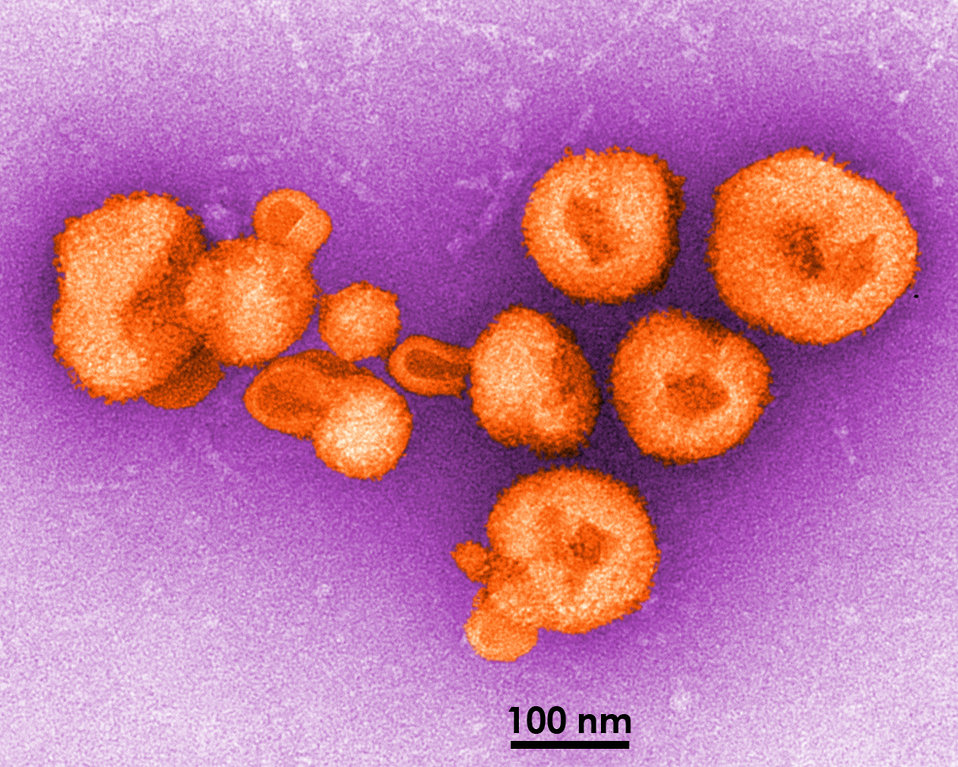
This transmission electron micrograph depicted eight virions (viral particles) of a newly-discovered virus, which was determined to be a member of the genus, Arenavirus. A cause of fatal hemorrhagic fever, it was confirmed that this virus was responsible for causing illness in five South Africans, four of whom died having succumbed to its devastating effects.